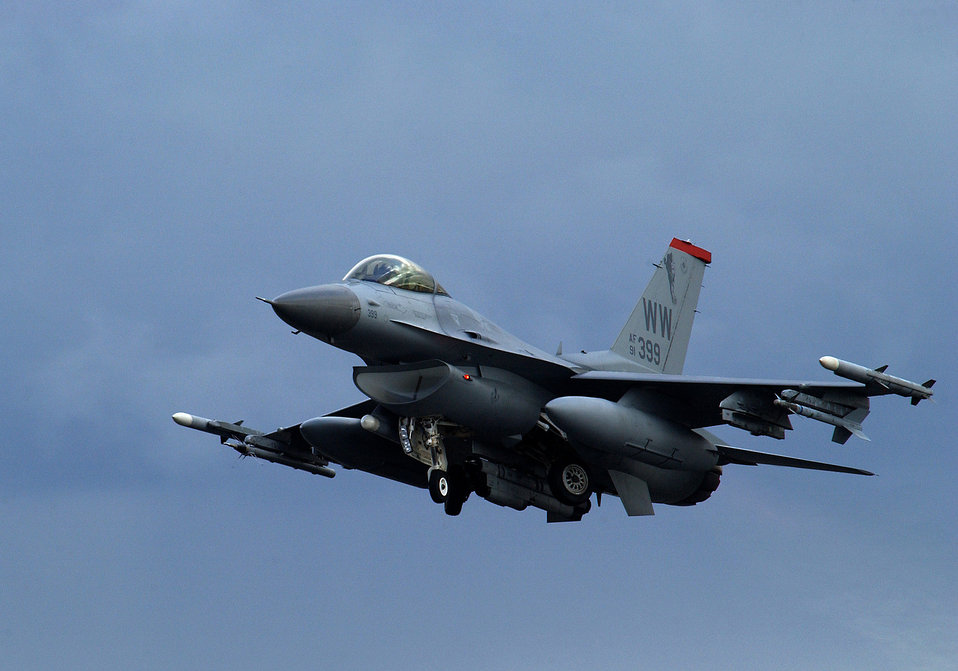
Fighting Falcons at Keen Sword

MISAWA AIR BASE, Japan -- An F-16 Fighting Falcon takes off from here recently while participating in Exercise Keen Sword 2005. Keen Sword exercise is a joint, bilateral defense exercise with U.S. Forces in Japan and the Japanese Self -Defense Forces.